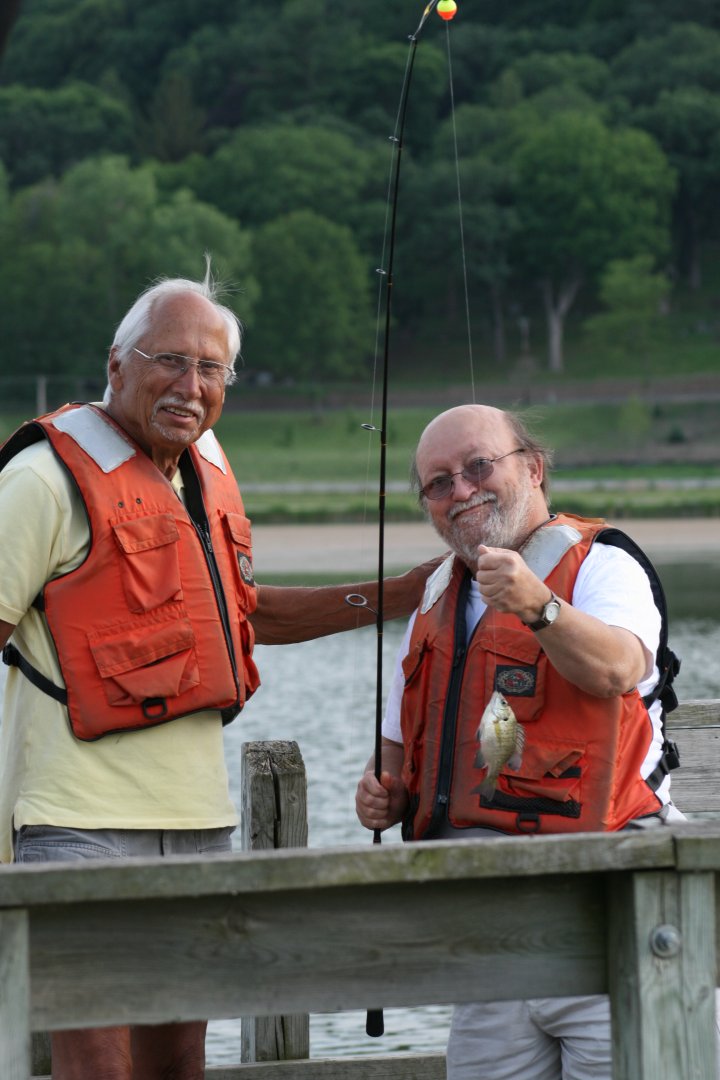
Volunteer Goran assists a Project Compass client

Refuge Volunteer Jerry Goran poses with a Project COMPASS client and his catch.